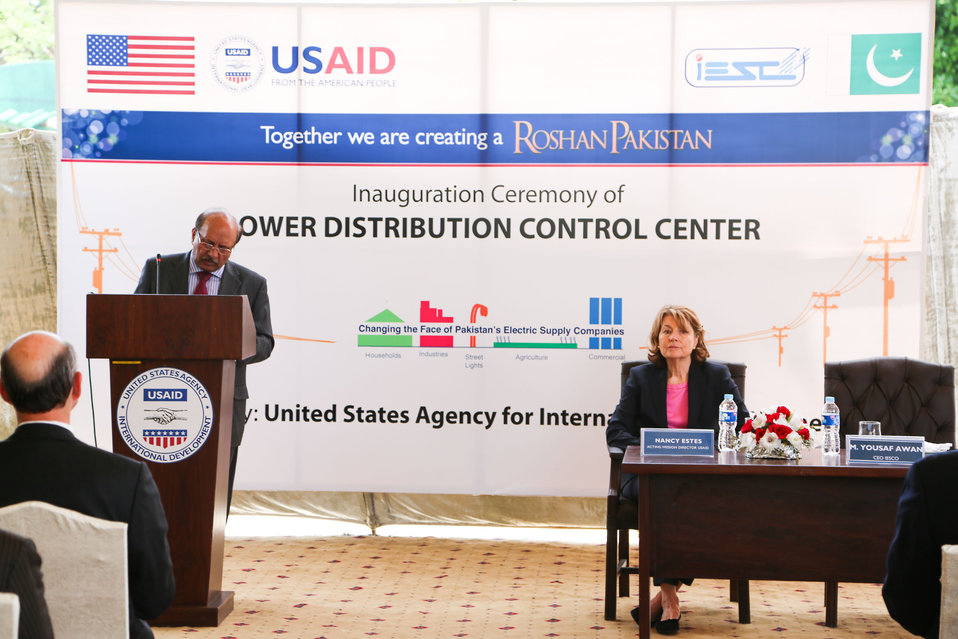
U.S. Improves IESCO’s ability to Reduce Unscheduled Load Shedding